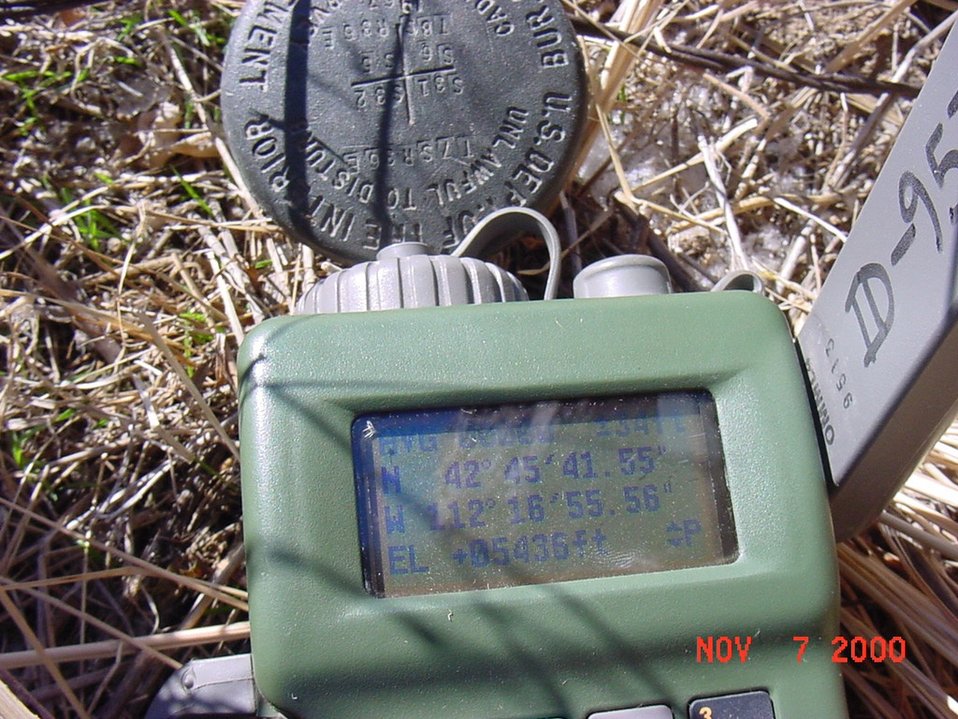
Cadastral Surveys Idaho Bureau of Land Management